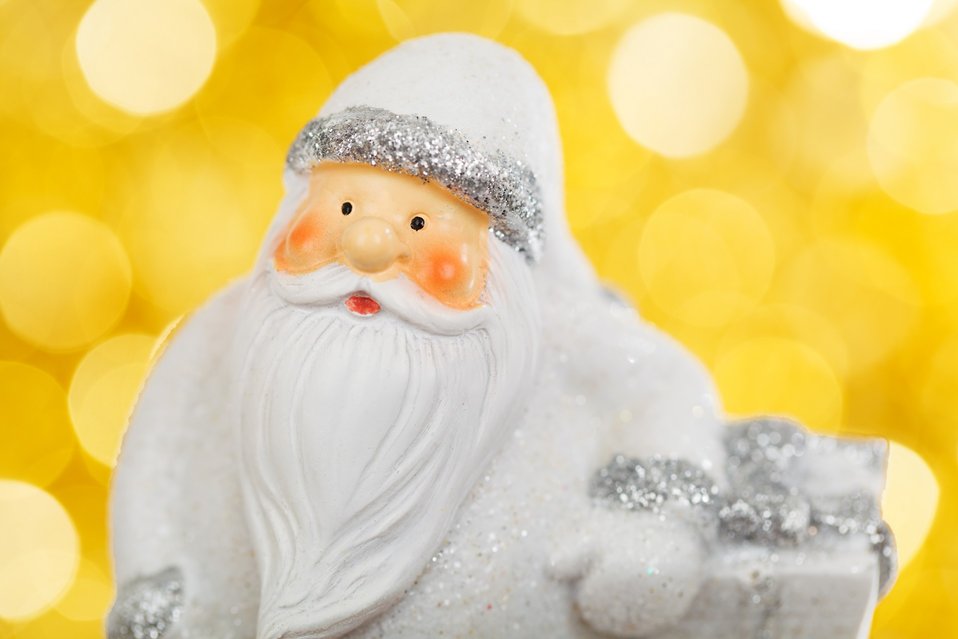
Santa claus and yellow lights

Santa claus on shiny yellow background.